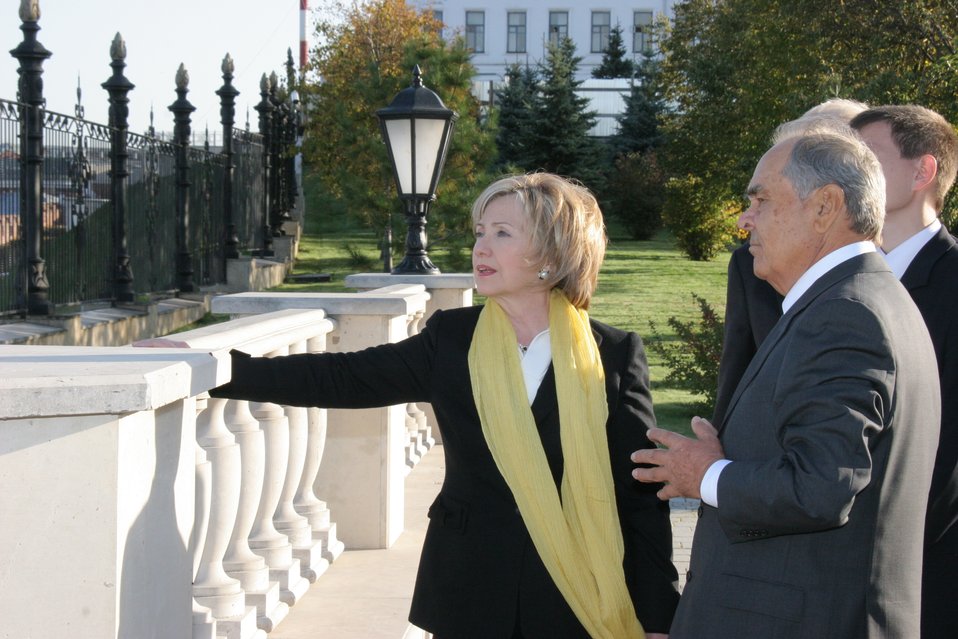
Secretary Clinton at the Presidential Palace in Kazan

U.S. Secretary of State Hillary Rodham Clinton and President Shaimiev look onto the Volga River from the Presidential Palace in Kazan, Russia October 14, 2009.